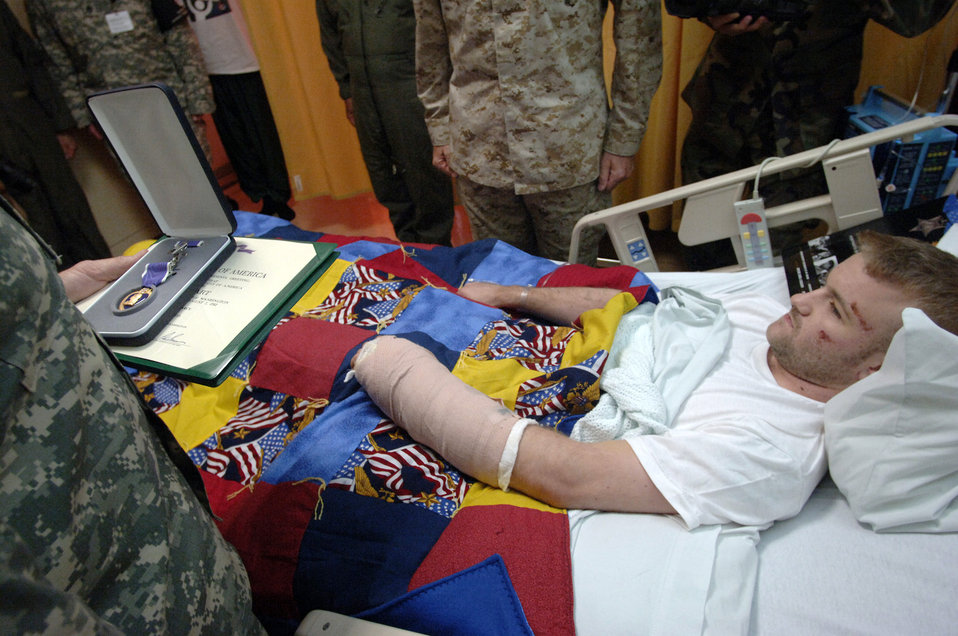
Purple Heart presentation

Army Spc. Colin Laird Pearcy receives a Purple Heart medal July 21 from Chairman of the Joint Chiefs of Staff Gen. Peter Pace. Specialist Pearcy sustained injuries in Iraq just four days earlier.